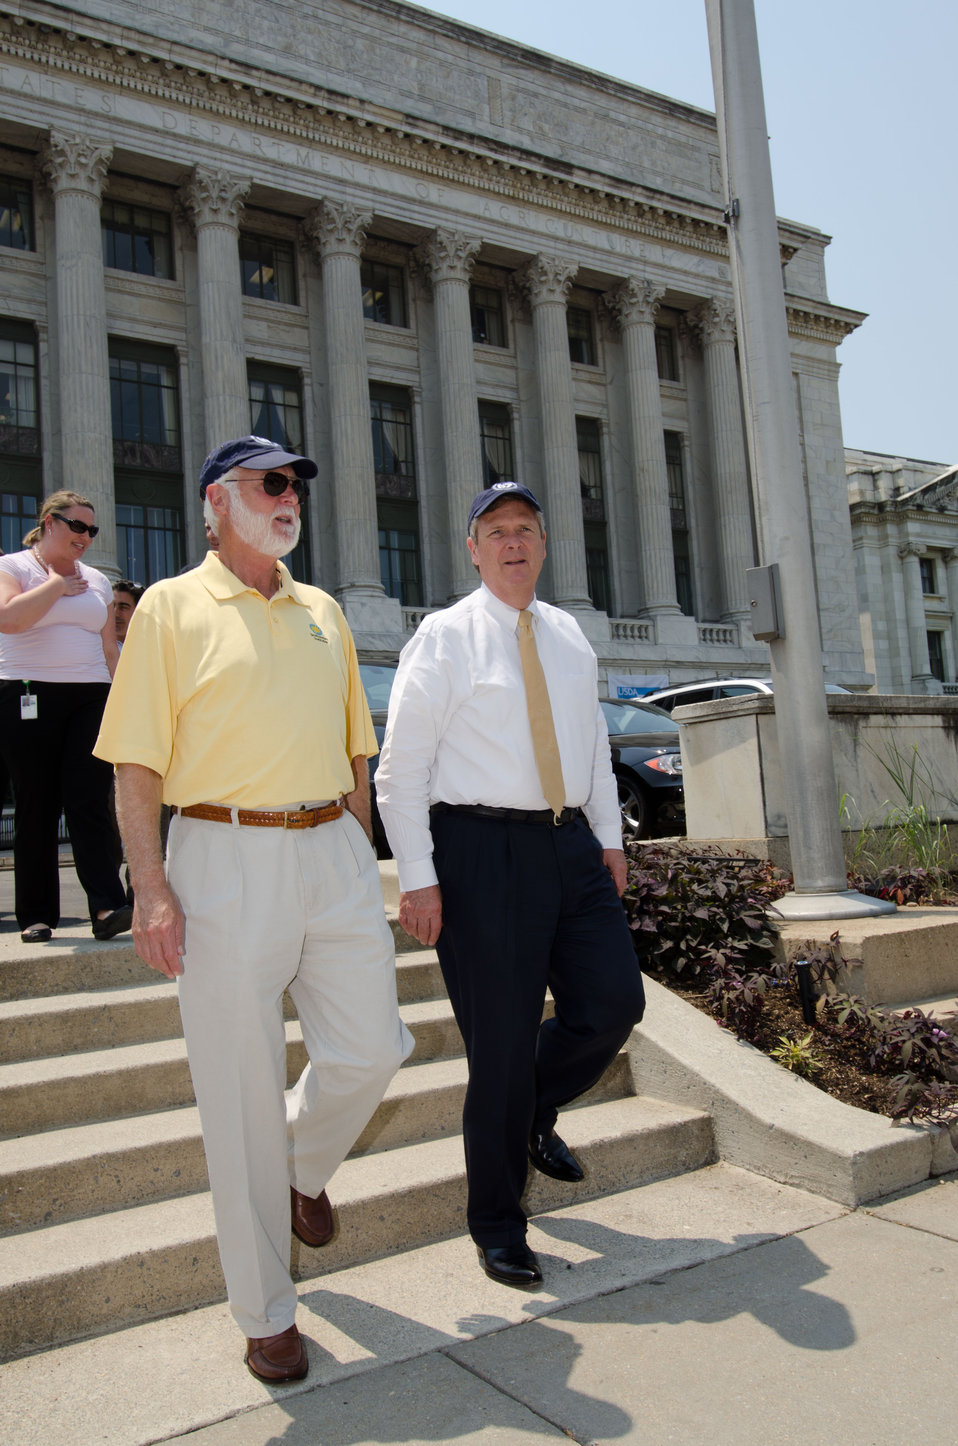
Smithsonian Institution Secretary G. Wayne Clough and Agriculture Secretary Tom Vilsack walk from the U.S. Department of Agriculture Whitten Building across to the 2012 Smithsonian Folklife Festival, on the National Mall in Washington, D.C. on Friday, June 29, 2012. One of the three themes this year is “Campus and Community.” It celebrates the 150 years of the USDA and the Land-Grant University System. The U.S. Department of Agriculture (USDA) and the Land-Grant system extend education across the country, contributing to American agriculture success and rural prosperity. “Campus and Community” has demonstrations, discussions, hands-on activities, and entertainment to that showcase the many ways that this partnership works to improve American agriculture and rural life.